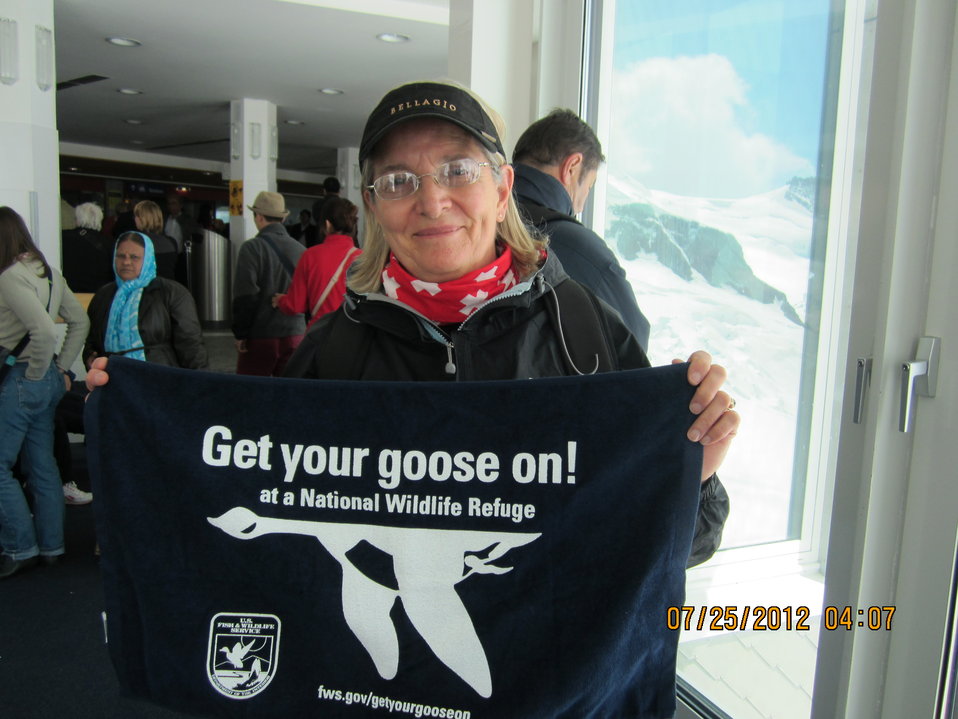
GYGO! - Swiss Alps Style!